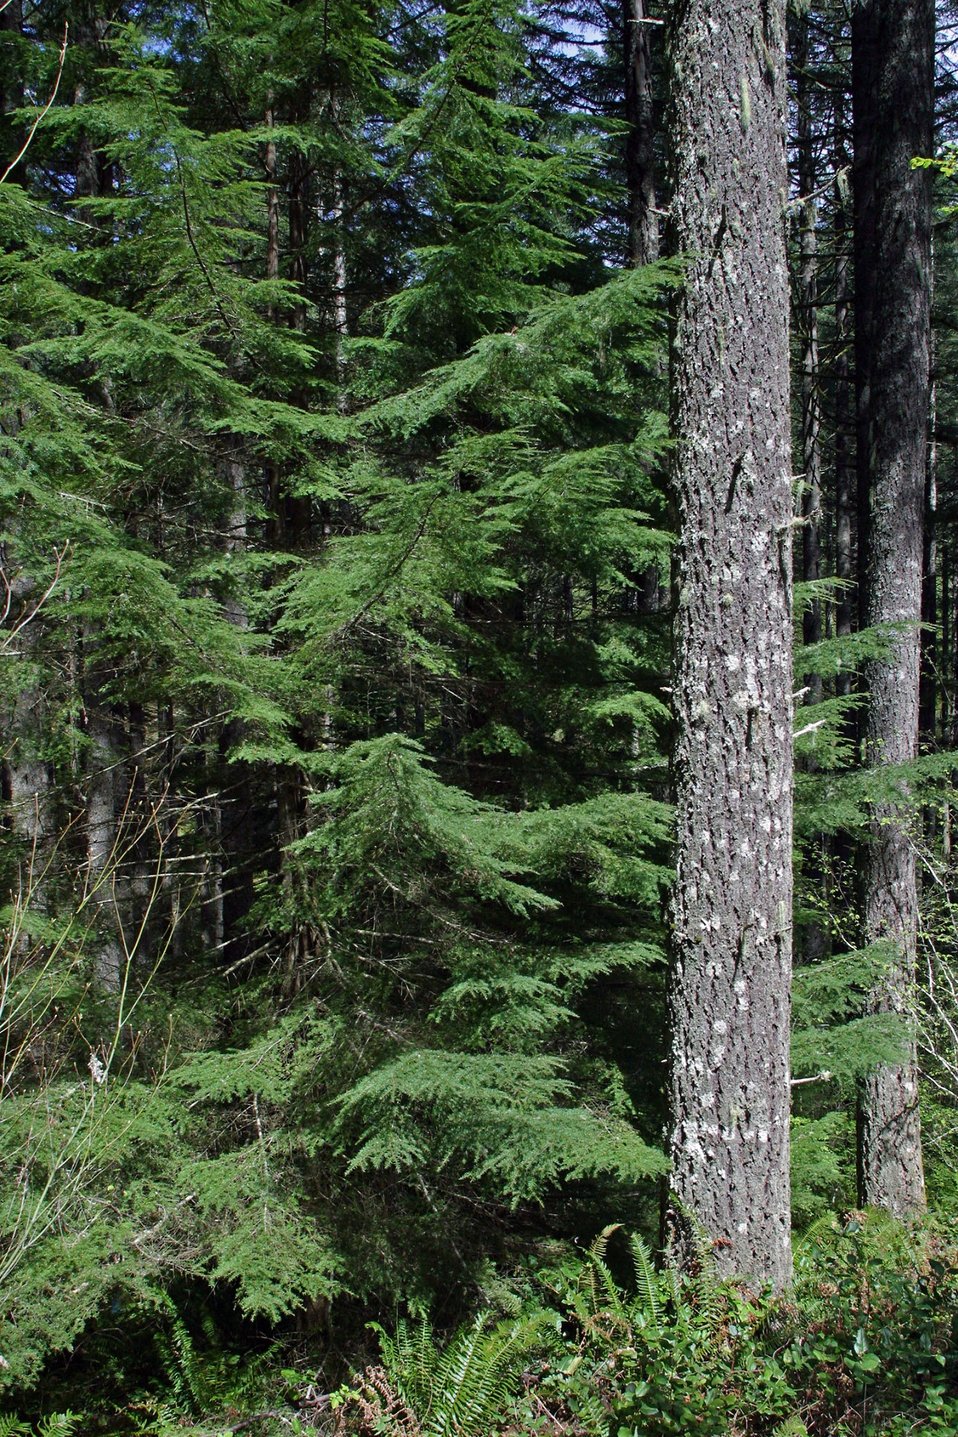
BLM forest lands in the Santiam watershed.